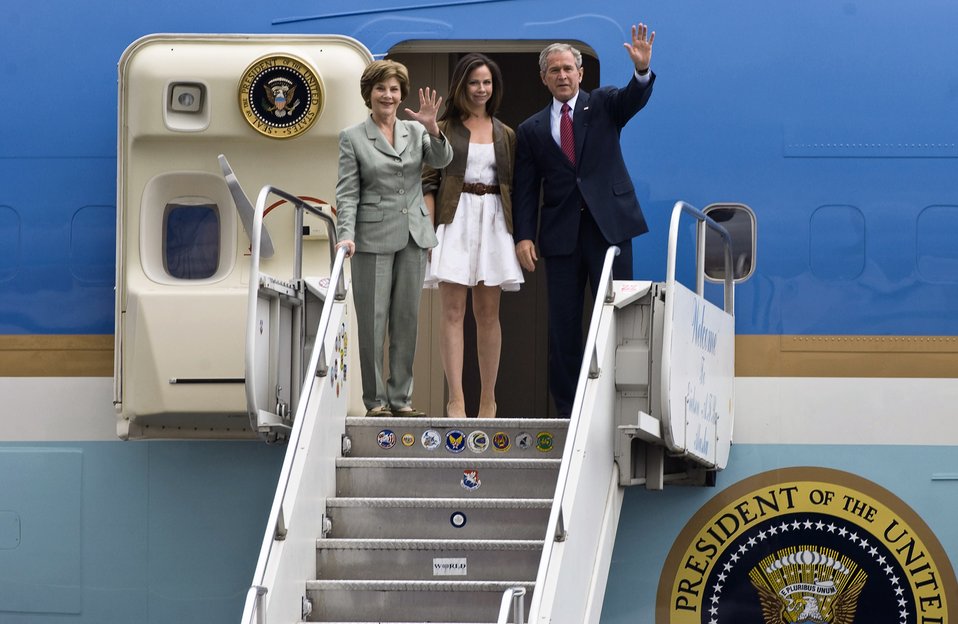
President visits Eielson

President George W. Bush, First Lady Laura Bush and their daughter, Barbara Bush, wave as they exit Air Force One Aug. 4 at Eielson Air Force Base, Alaska. The president talked to a crowd of more than 2,000 military members.